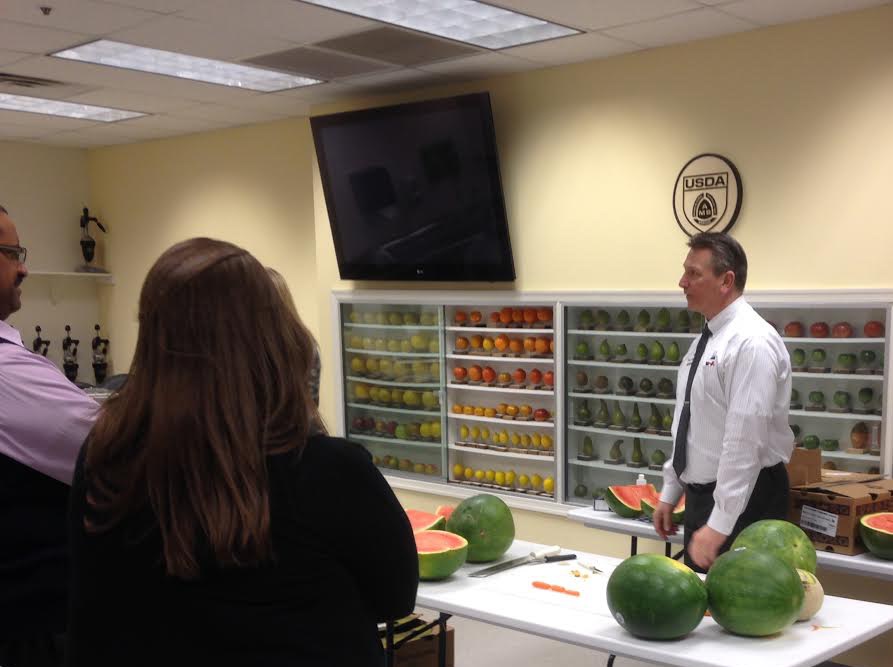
Produce Safety University - watermelon demonstration

The Produce Safety University is a collaborative effort between the U.S. Department of Agriculture's (USDA) Agricultural Marketing Service (AMS), USDA Food Nutrition Service (FNS), and local schools. The training teaches school food service personnel how to safely handle, prepare, and store fresh fruits and vegetables.